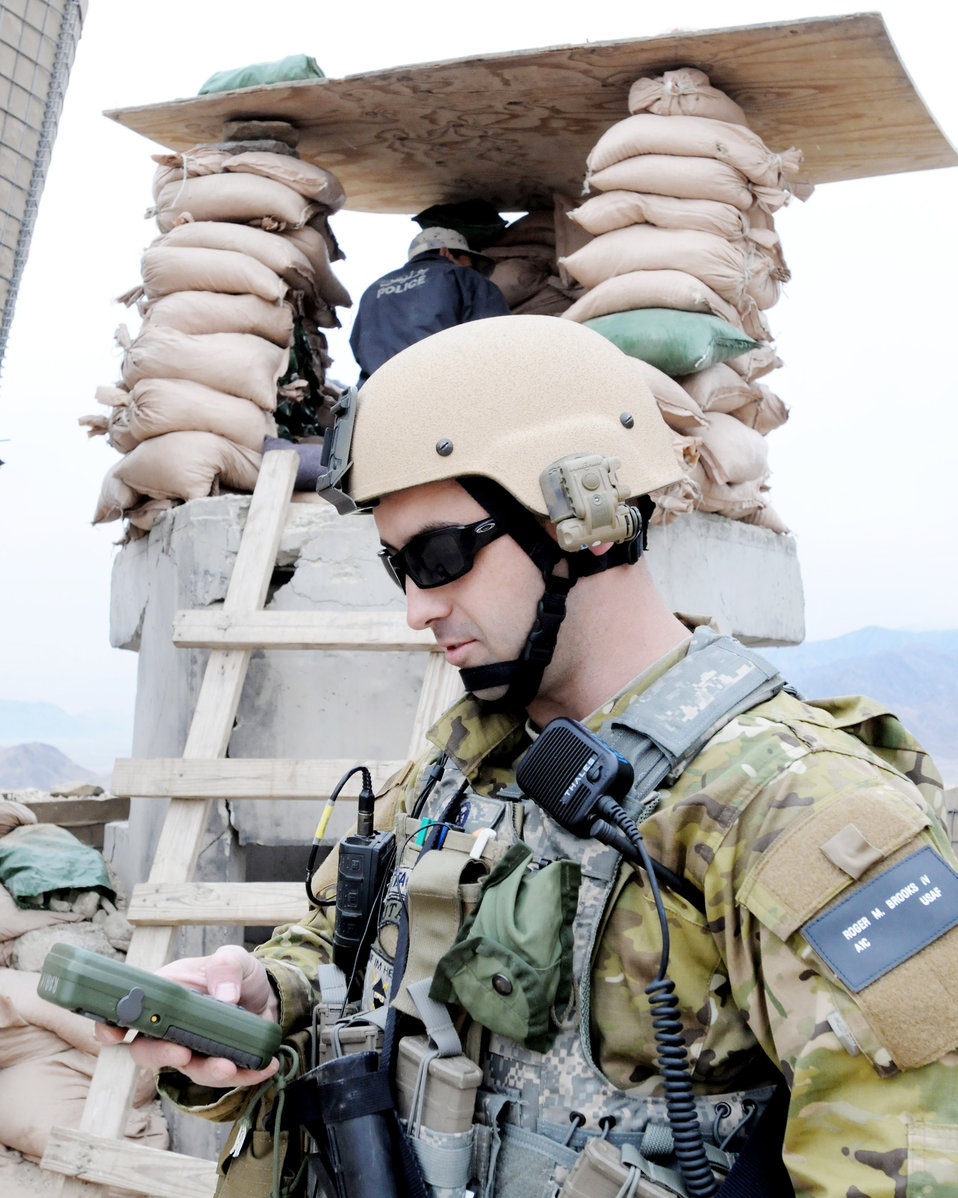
Getting the coordinates

Airman 1st Class Roger Brooks IV, a member of a 12-man Joint Terminal Attack Controllers team, takes coordinates at an Afghan border police observation post in the mountains of the Achin District in Nangarhar Province. He is from Marietta, Ga.